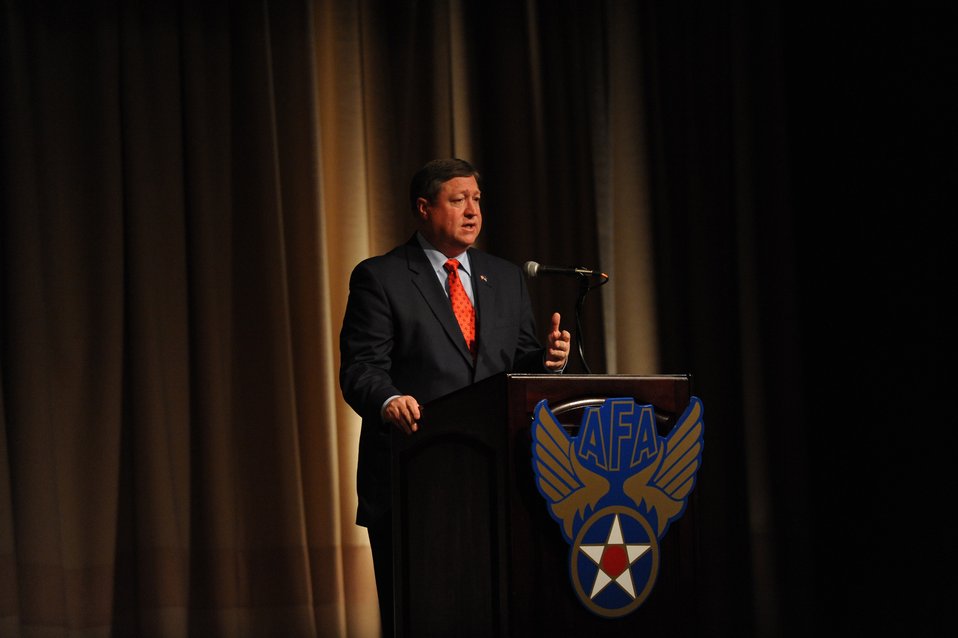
Secretary Donley speaks during Air Force Week Los Angeles

Air Force Secretary Michael B. Donley discusses the Air Force's top priorities and the way ahead for U. S. Space Command and the new Global Strike Command Nov. 21 during the Air Force Association's Global Warfare Symposium. The symposium was the culmination of Air Force Week Los Angeles, an event using various activities and exhibitions to educate the local community about the Air Force's capabilities and missions.